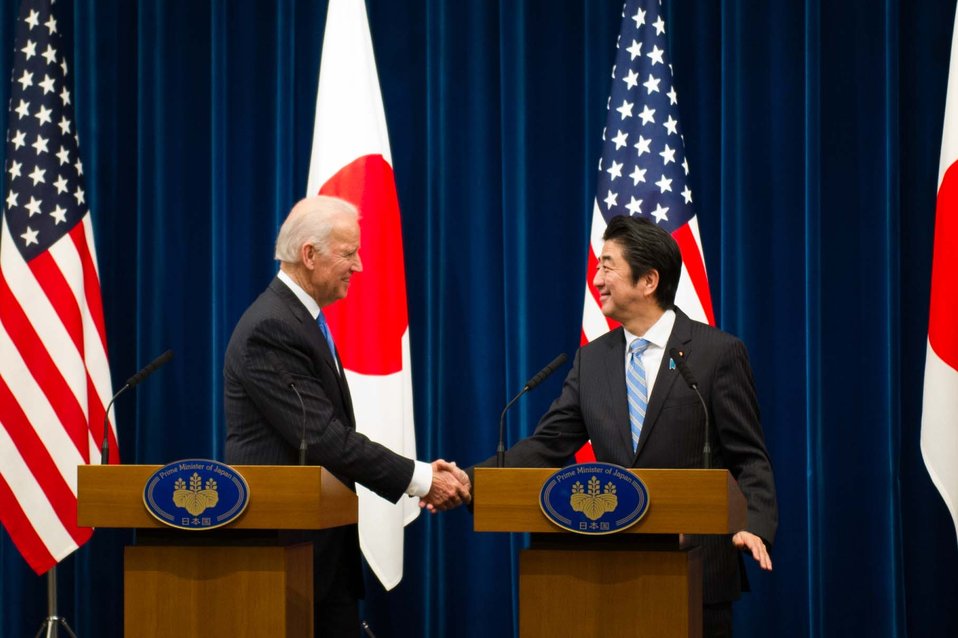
Vice President Biden Shakes Hands With Japanese Prime Minister Abe

Vice President Joseph Biden shakes hands with Japanese Prime Minister Shinzo Abe after their meeting in Tokyo, Japan, on December 3, 2013.